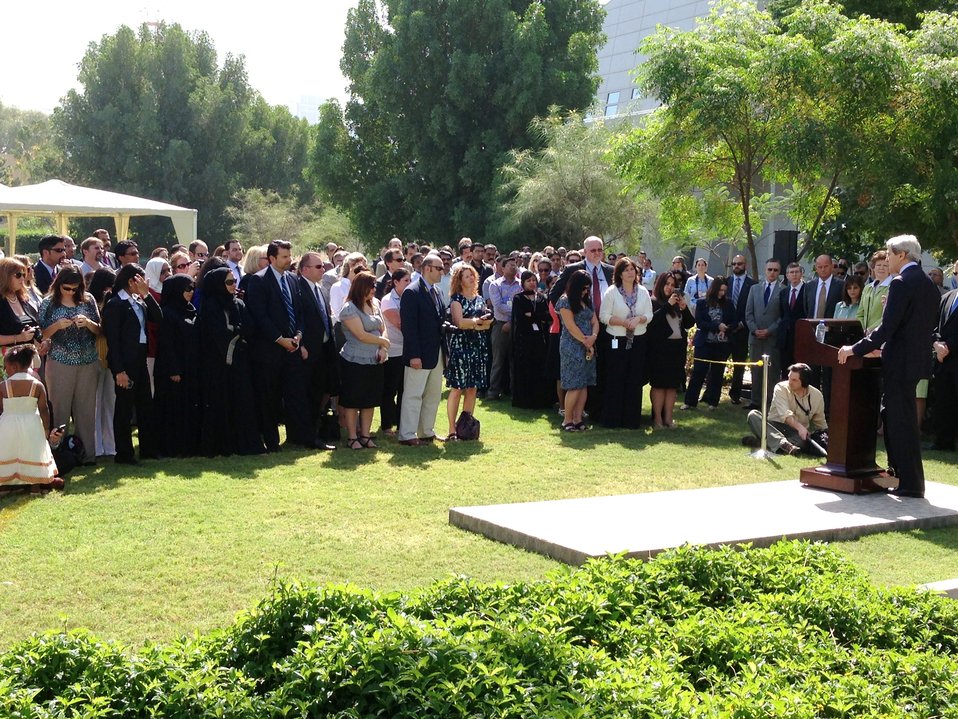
Secretary Kerry Delivers Remarks at Embassy Abu Dhabi's Meet and Greet

U.S. Secretary of State John Kerry delivers remarks to the staff and families of the U.S. Embassy in Abu Dhabi, United Arab Emirates, on March 5, 2013.